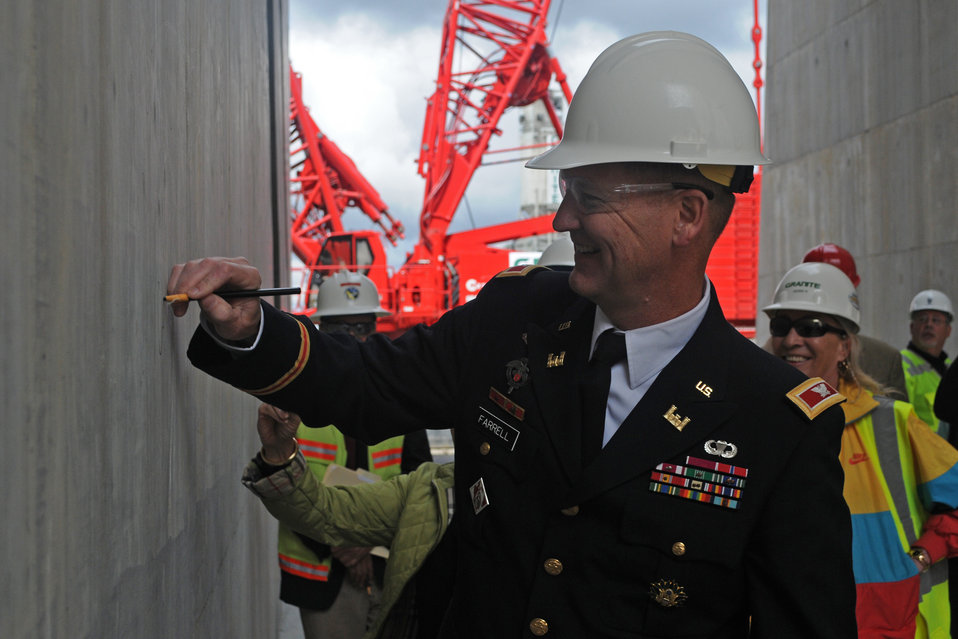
Corps hosts elected officials, partners to celebrate progress on Folsom spillway

Col. Michael Farrell, commander for the U.S. Army Corps of Engineers Sacramento District, signs one of the bays on the new auxiliary dam in Folsom, Calif., during a media event and site tour on April 26, 2014. Elected officials and project partners came together to celebrate the transition from concrete placement to gate installation this summer on the new dam, which will allow operators to release water earlier and more quickly during large storm events. The auxiliary spillway project is part of a $900-million cooperative effort to improve the safety of Folsom Dam and reduce flood risk for the Sacramento area. Photo cropped for emphasis.